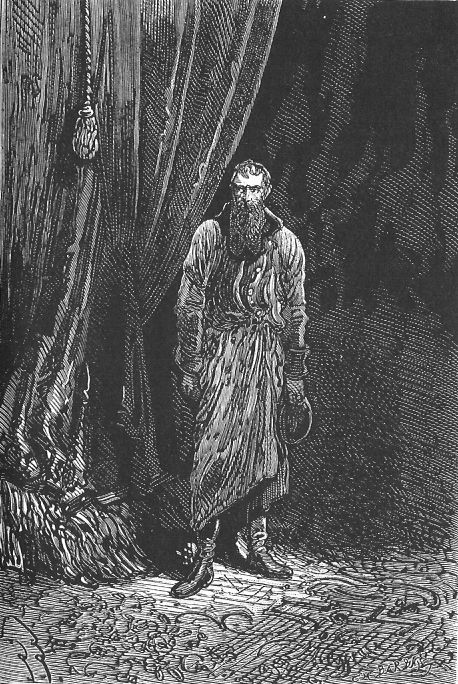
An illustration from the novel 'Michael Strogoff: The Courier of the Czar' by Jules Verne drawn by Jules Férat. Polski: Ilustracja powieści Juliusza Verne'a 'Michał Strogow, kurier carski' autorstwa Julesa Férata. Français : 'Michel Strogoff. Le courier du tzar', Jules Férat. Français : Wassili Fédor.